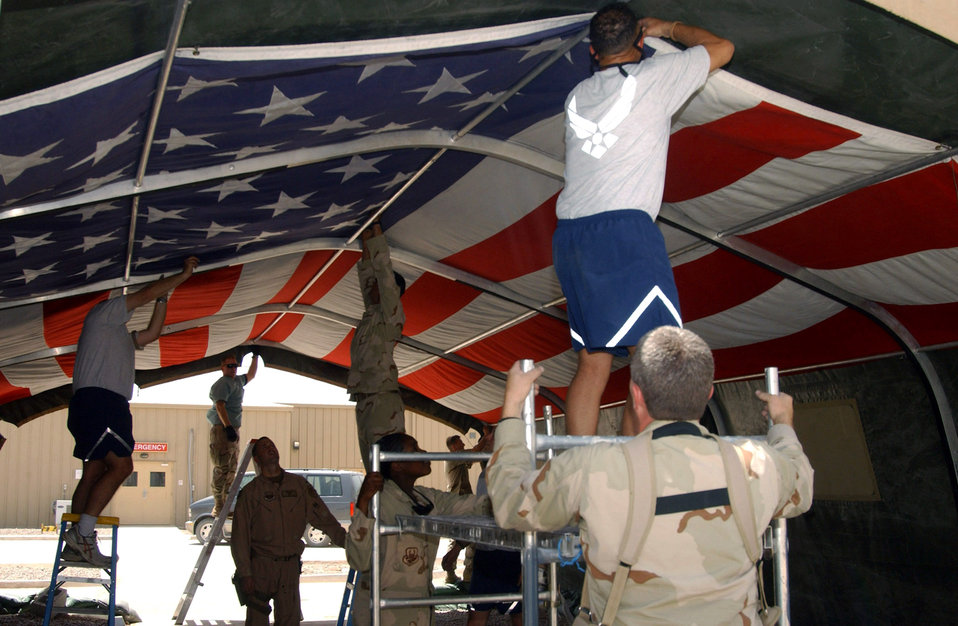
Hero's Highway

Airmen and volunteers from the 332nd Expeditionary Medical Group put up the American flag that hangs in the Air Force Theater Hospital's Hero's Highway at Balad Air Base, Iraq. The Hero's Highway was moved from the tent hospital to the new facility July 21. Wounded servicemembers travel under this flag as they make their way from the helicopter pad to the hospital. The new facility, which opens Aug. 3, will have about 97,000 square feet featuring 20 intensive care units, 40 beds and up to eight operating tables.